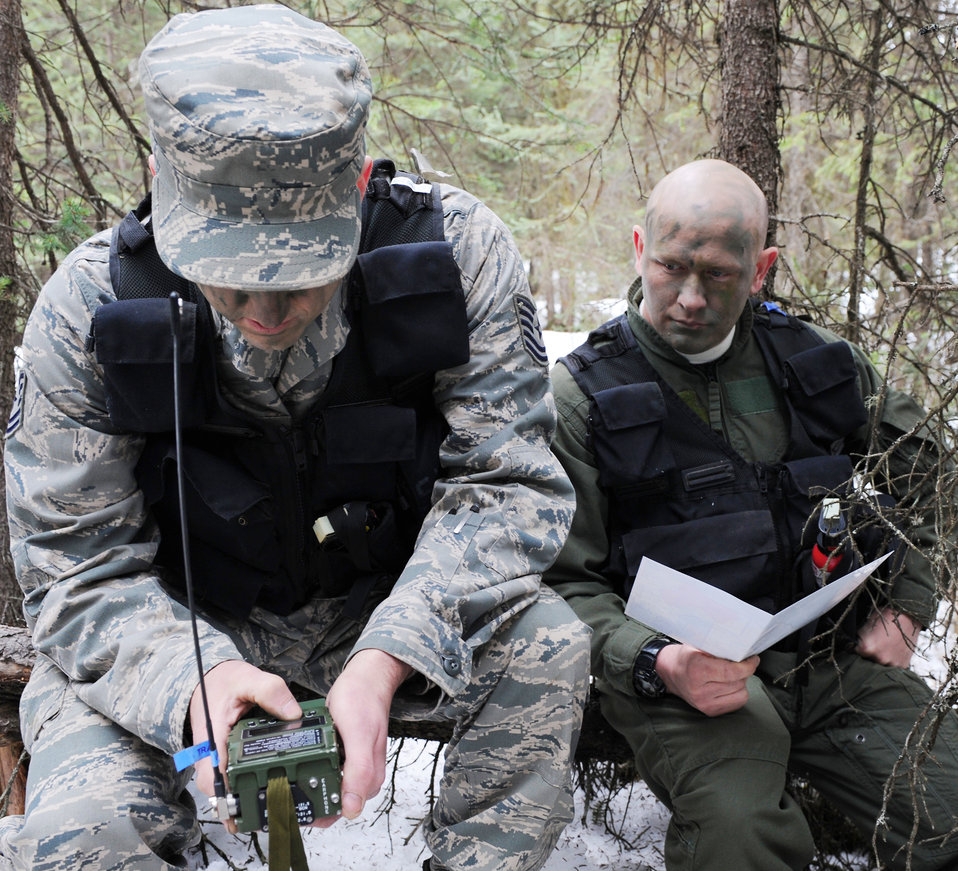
Airmen train for cold weather survival

Tech. Sgt. Andrew Reich (left) and Master Sgt. Andrew Schultz complete land navigation training April 12, 2010, at Elmendorf Air Force Base, Alaska. Survival, evasion, resistance and escape field training operations training covers hand on learning with maps, GPS units and radios. Sergeants Reich and Schultz are communications system operators with the 962nd Airborne Air Control Squadron.